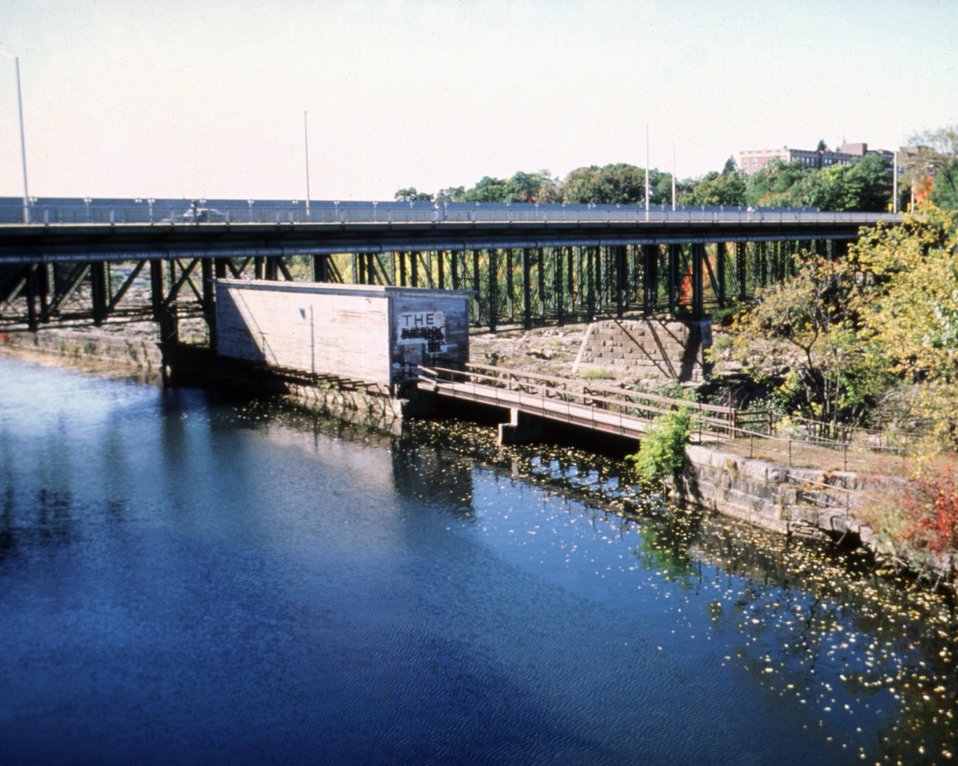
VIEW OF OLD GATE CONTROL HOUSE.

THE DOE SMALL-SCALE HYDROPOWER PROGRAM CONSISTS OF 19 PROJECTS AND DEMONSTRATES THE VIABILITY OF SMALL-SCALE HYDRO-POWER WITH AVAILABLE TECHNOLOGY. THE BOOTT MILLS PROJECT, BEGUN IN OCTOBER, 1983, WENT ON LINE IN NOVEMBER, 1985. UTILIZING TWO KAPLAN TURBINES THAT PRODUCE A MAXIMUM OF 15,000 KILOWATTS, THE DAM PROVIDES A GROSS HEAD OF 35 FEET WITH AN ANNUAL STREAM FLOW OF 4,500 CFS.